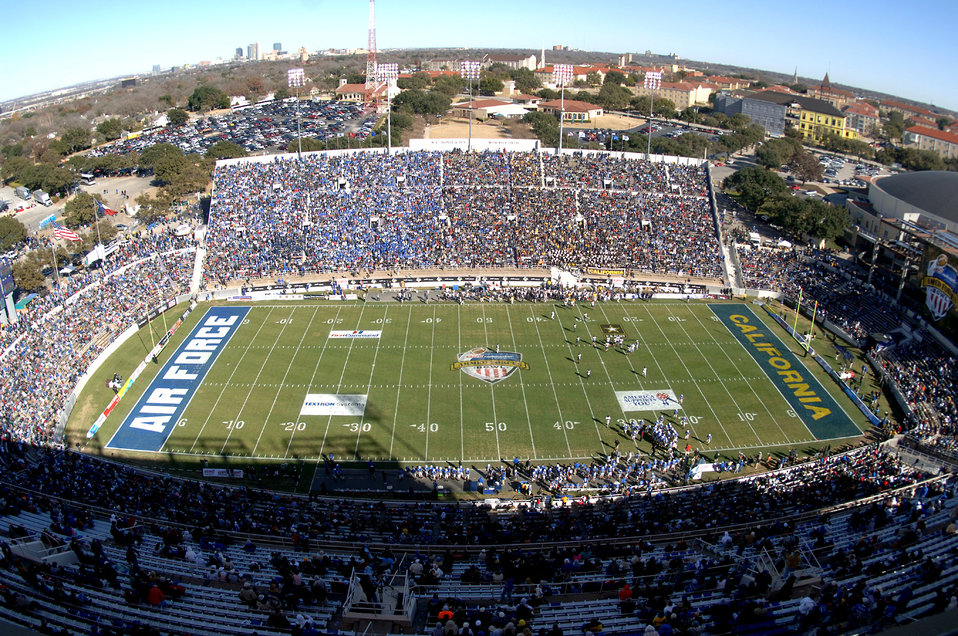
Falcons bowl return a bear

A bowl-record crowd of 40,905 views third-quarter action of the Bell Helicopter Armed Forces Bowl at Amon G. Carter Stadium Dec. 31. The Falcons lost 42-36 in their first bowl appearance since 2002 before a bowl record 40,905 fans and a nationally televised audience on ESPN.